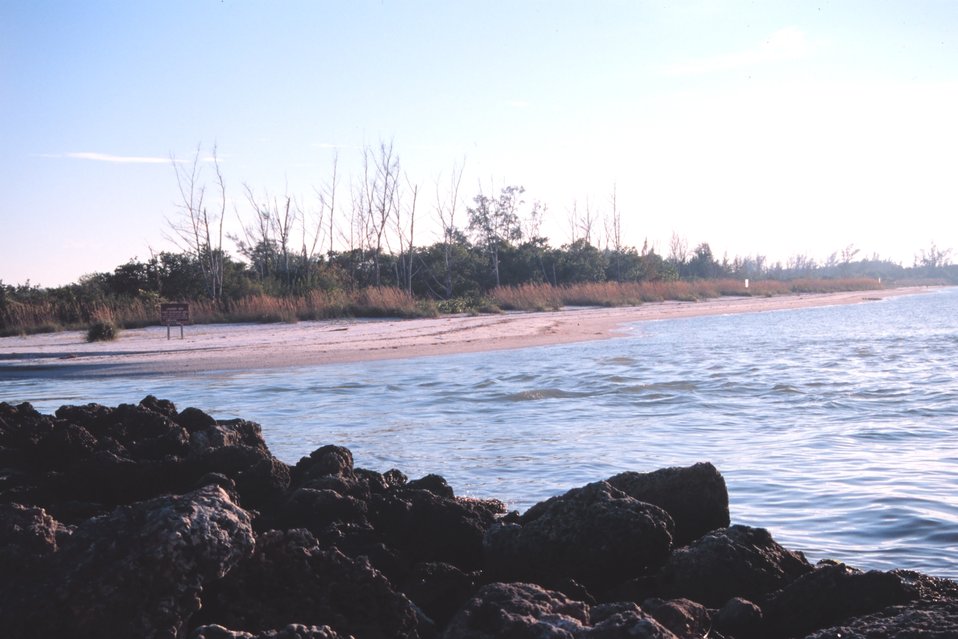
Lovers Key State Recreational Area